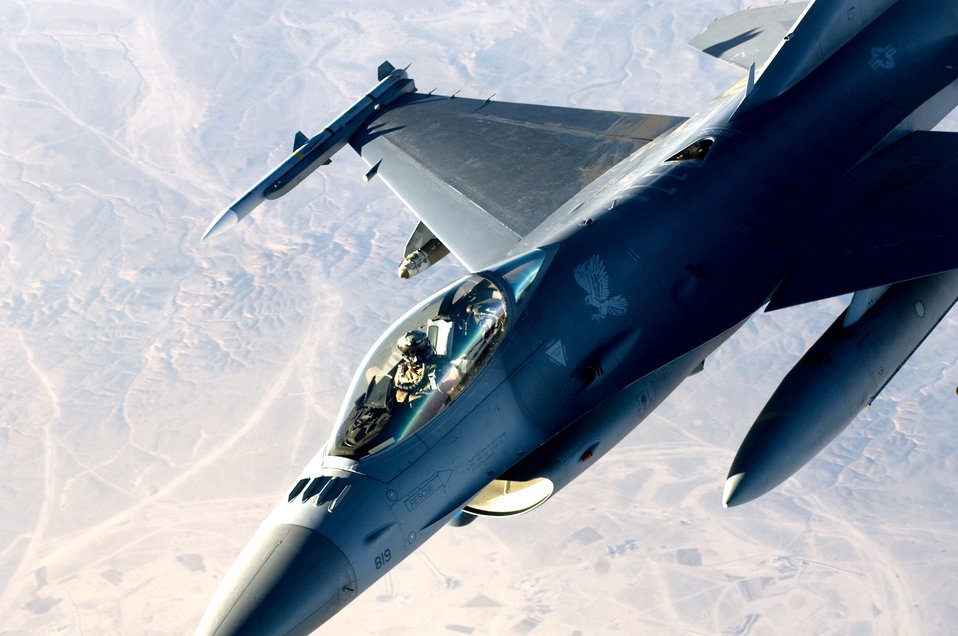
KC-135s keep them flying

A F-16 Fighting Falcon detaches from a KC-135 Stratotanker after refueling over Iraq in support of Operation Iraqi Freedom. On Jan. 29, U.S., French and Royal Air Force tankers flew 25 sorties and off-loaded almost 1.6 million pounds of fuel in support of OIF and Operation Enduring Freedom.